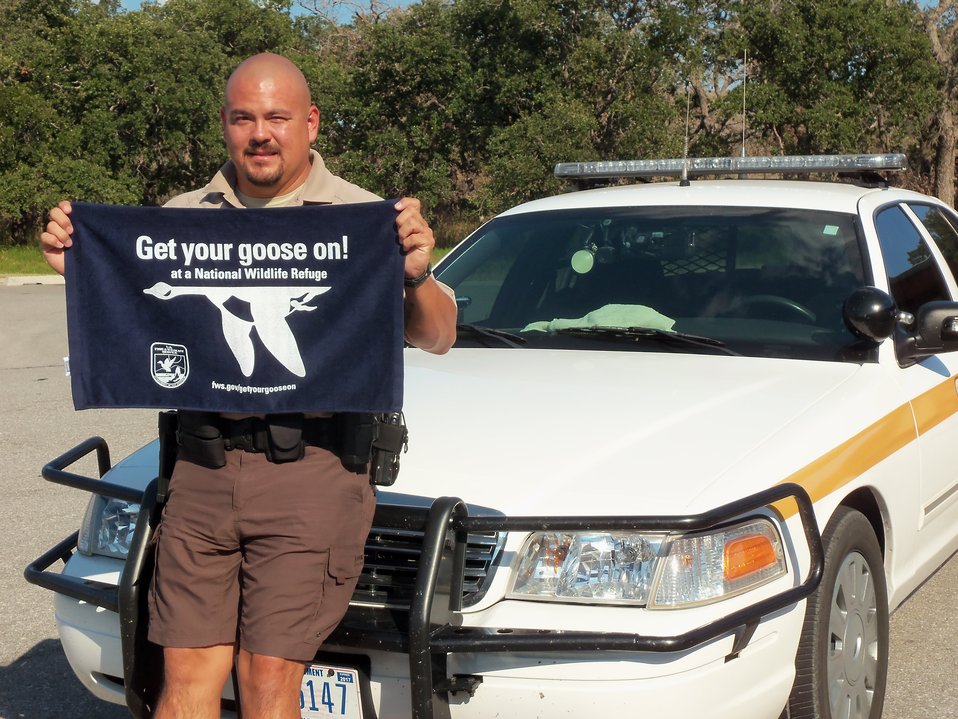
Get Your Goose On!

Wichita Mountains National Wildlife Refuge in Oklahoma.